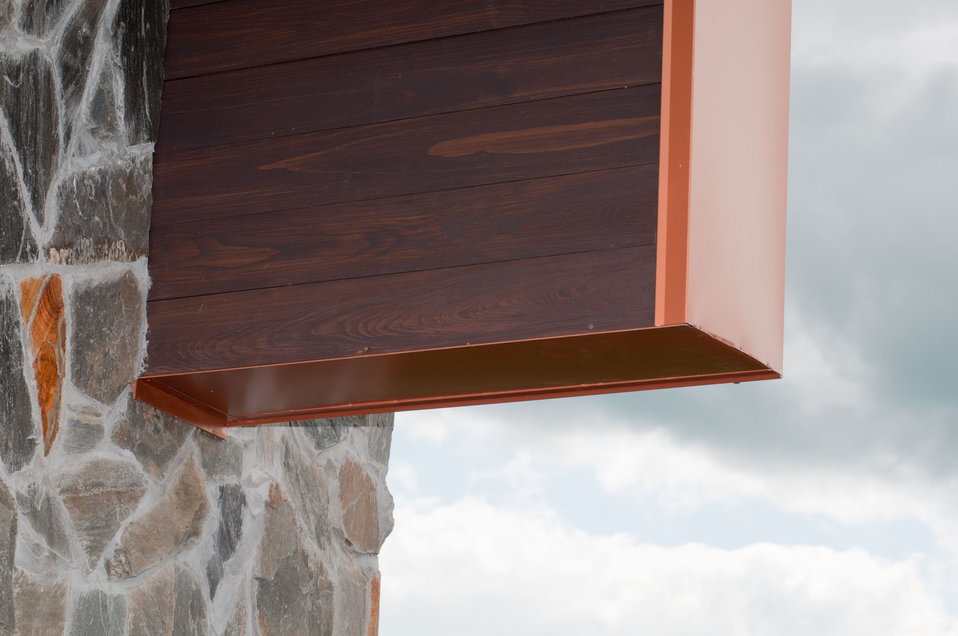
Cooper Vineyards in Louisa, VA, is the first winery on the East Coast and the second in the country to be awarded the fourth and highest, Platinum certification by Leadership in Energy and Environmental Design (LEED).
From a Virginia Wine Board Marketing Office press release, “The process of building a LEED platinum certified building was initially more expensive and arduous than co-owners, Jacque Hogge, MD and Geoffrey Cooper, MD expected, but they were able to get financial assistance from the United States Department of Agriculture. “Know that there are grants available to help with the costs of sustainable building projects,” Hogge advises to other potential green wineries. Cooper Vineyards received 2 of the 3 USDA (U.S. Department of Agriculture Rural Development (RD) Rural Energy Financing program) grants awarded in Virginia in 2010 to help with the expenses of their construction.”
Rural Energy Financing program focuses on loan guarantees, loans and grants to agricultural producers, businesses, cooperatives and rural residents for renewable energy systems and to make energy efficiency improvements.
The tasting room and building collects rainwater from the roof; uses low flow water fixtures to reduce usage by 40%; utilizes structurally insulated panels for the roof and walls; heats and cools the entire building using a geothermal system that includes pipes that are embedded in the parking lot; low-voltage LED lighting with daylight and occupancy sensors provide ample light when it is needed; a solar panel array provides more than 15% of the energy needs for the building, and much of the construction materials are from local and recycled material sources. For more information about USDA please go to www.usda.gov, Rural Development and Rural Energy Financing. LEED was developed by the U.S. Green Building Council (USGBC) is a 501 c3 non-profit organization committed to a prosperous and sustainable future for our nation through cost-efficient and energy-saving green buildings.